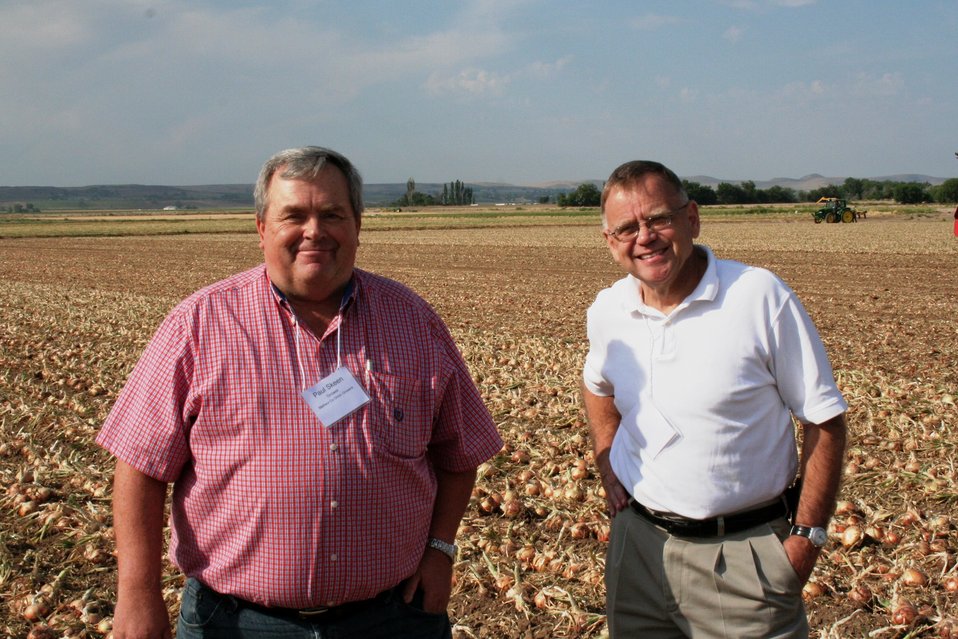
On the Road with Mike Taylor

FDA Deputy Commissioner Michael Taylor (right) tours an onion field with farmer Paul Skeen, president of the Malheur County Onion Growers in Oregon. Mike and colleagues started a five-day tour of the Pacific Northwest on Sunday, Aug. 11, 2013 -- visiting Idaho, Oregon and Washington -- to get a first-hand look at produce production and irrigation operations, and to discuss the proposed Produce Safety Rule with growers, food industry representatives and state officials.For more about Mike's multi-region tour, read these FDA Voice blog posts:

• Hearing the Concerns of Maine Growers Striving for Agricultural Diversity
• On the Road with Mike Taylor: Touring the Pacific Northwest
• On the Road with Mike Taylor, Day 2: Frank Talk in Farm Country
• On the Road with Mike Taylor, Day 3: Families and Partnerships
• On the Road with Mike Taylor, Day 4: Looking to the Future